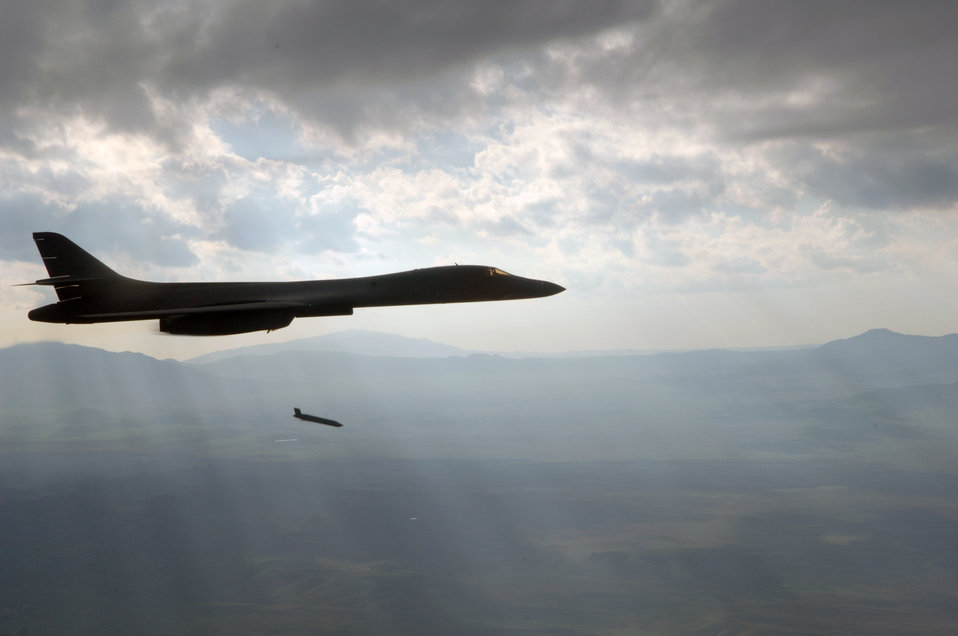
JASSM-ER nears operational employment

The Joint Air-to-Surface Standoff Missile - Extended Range is an autonomous, air-to-ground, precision-guided standoff missile designed to meet the needs of U.S. warfighters. It shares the same powerful capabilities and stealthy characteristics of the baseline JASSM, but with more than two-and-a-half times the range.